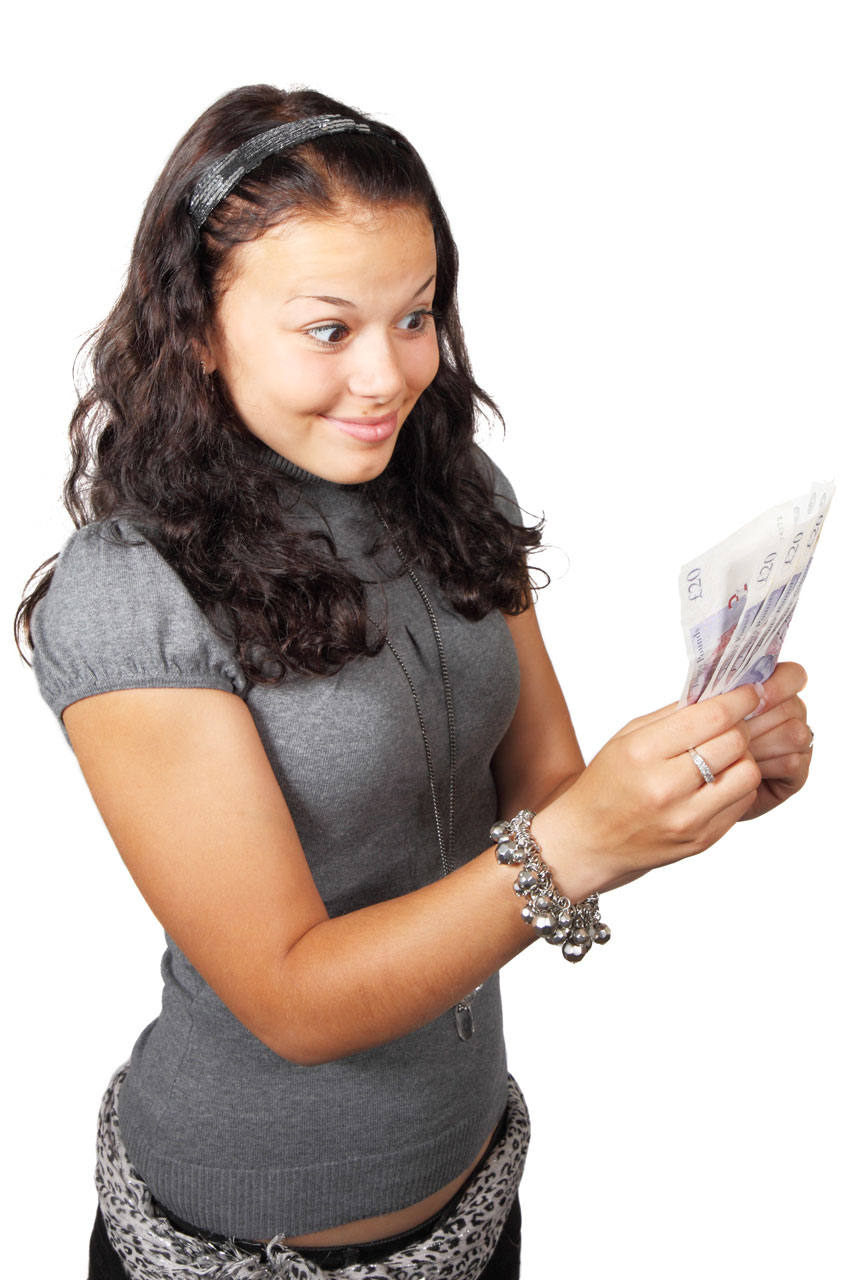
Woman looking at money

Young woman staring at money.